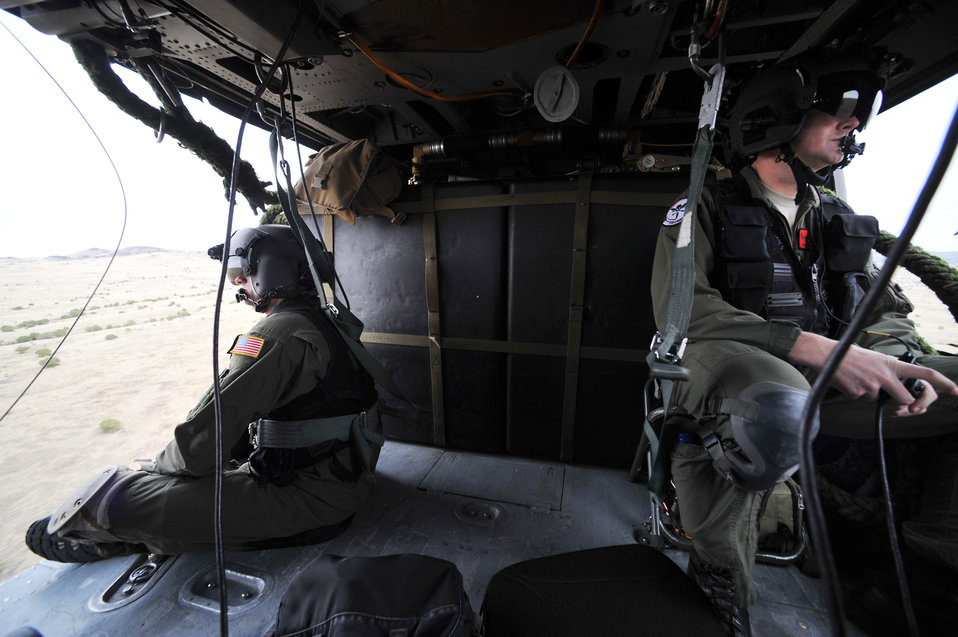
Helicopter crews train at Kirtland AFB

Master Sgt. Cory Norman (left) and Staff Sgt. Brian Lilly scan their sectors during a training flight Aug. 25, 2009, near Kirtland Air Force Base, N.M. Sergeant Norman is an instructor flight engineer and Sergeant Lilly is an instructor gunner assigned to the 512th Rescue Squadron at Kirtland AFB.